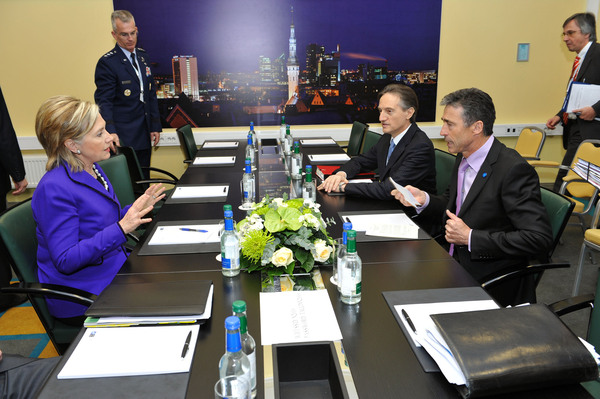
NATO Secretary General Rasmussen With Secretary Clinton

NATO Secretary General Anders Fogh Rasmussen converses with U.S. Secretary of State Hillary Rodham Clinton during the NATO-U.S. Bilateral Meeting in Tallinn, Estonia, April 22, 2010.